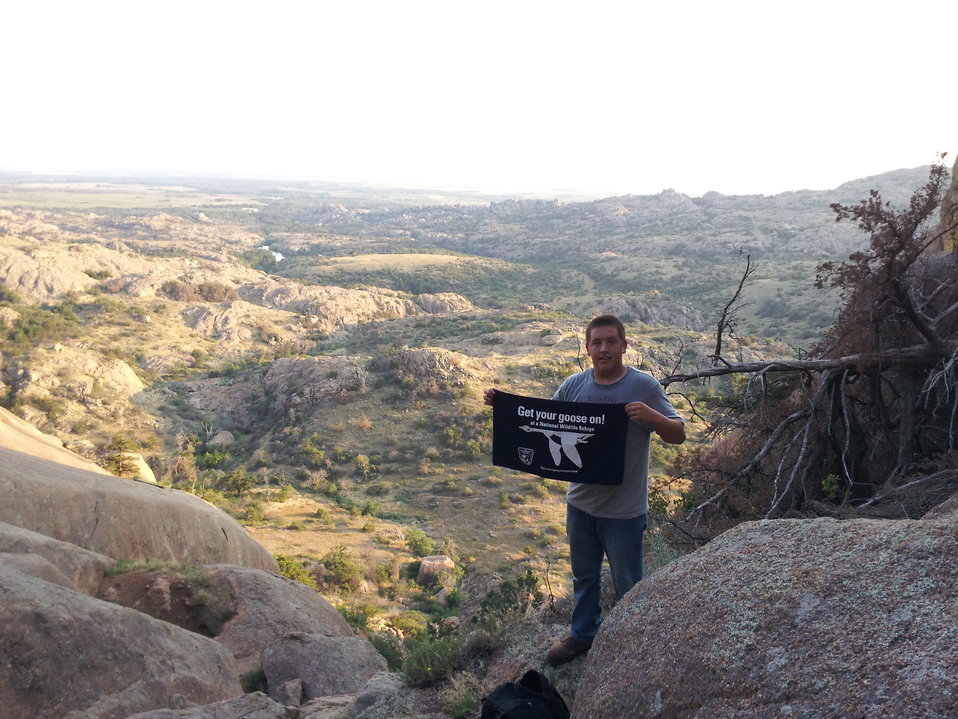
Get Your Goose On!

Wichita Mountains National Wildlife Refuge in Oklahoma.